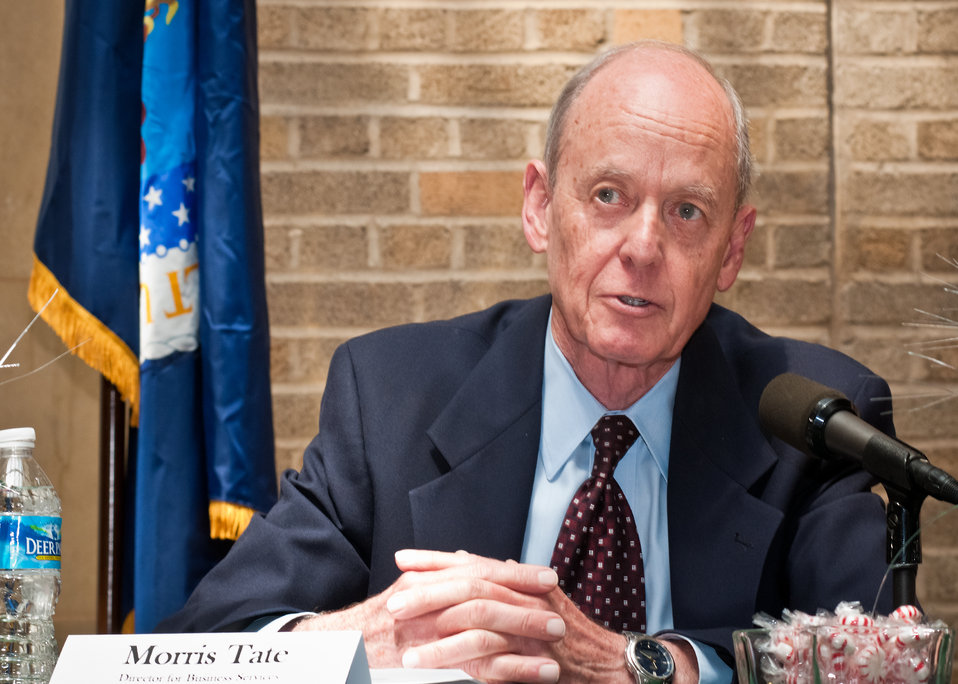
Morris Tate, Director for Business Services, Office of Operations listens to employee questions during a “Telework Program Party/Brown Bag” event on the patio of the Jamie Whitten Building of United States Department of Agriculture, in Washington, DC, on Tuesday, June 7, 2011. The event included an interactive telework panel and exhibits from the field of telework, telecommuting and mobile work environments. The event was open to all USDA employees, supervisors, managers, human resources staff and USDA telework program coordinators.